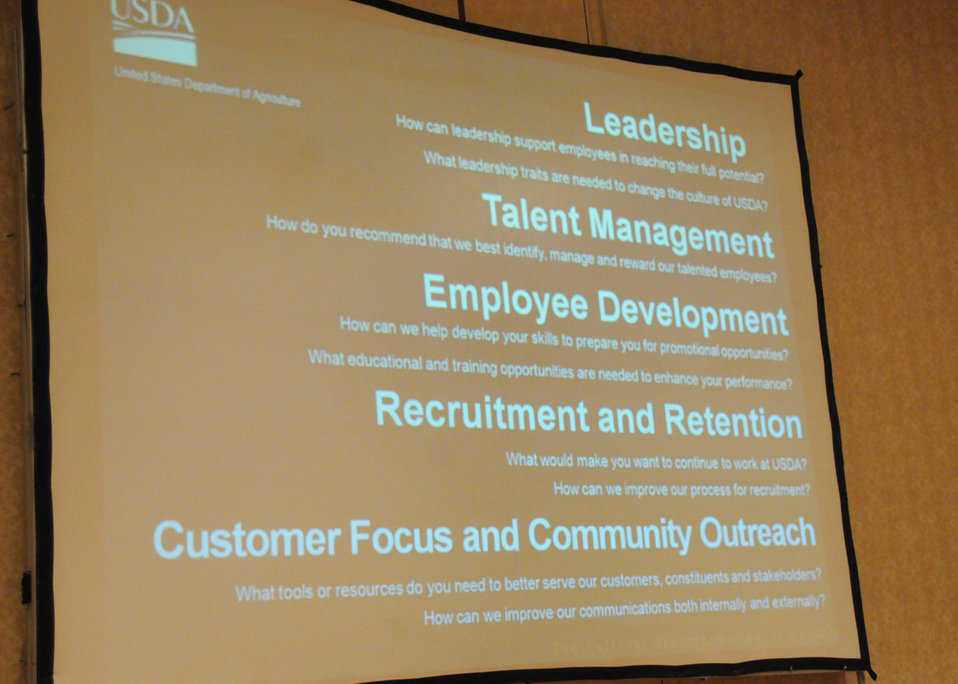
The U.S. Department of Agriculture (USDA) held the third of six Cultural Transformation Employee listening sessions in Kansas City, MO, on Wednesday, April 14, 2010. USDA employees expressed their concerns with issues at the Department and made suggestions for correcting them and improving the image of USDA. Shown are the five subjects that were discussed during the session. USDA photo 10di1308-79.